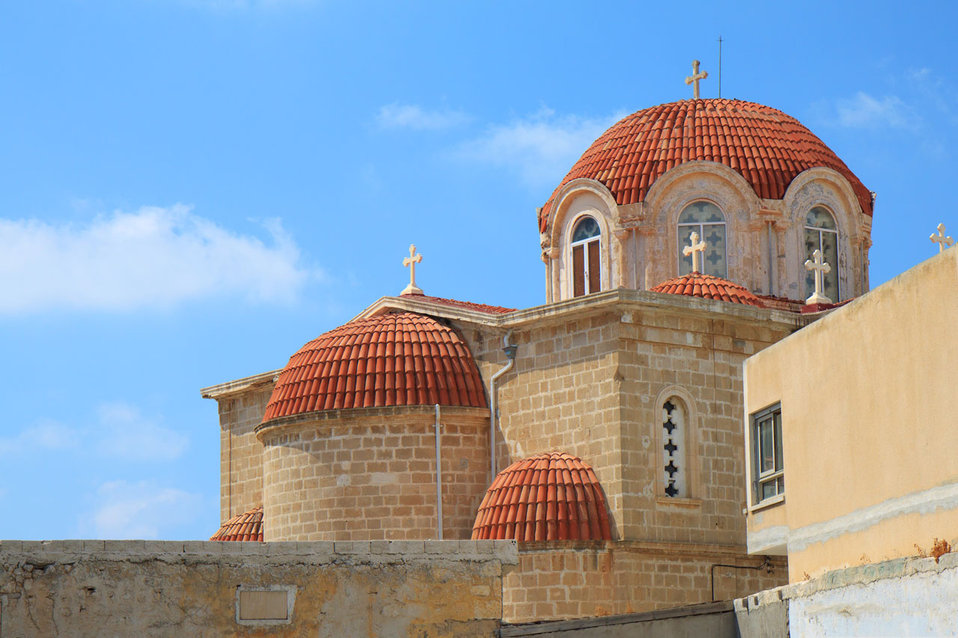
Mediterranean church in cyprus.